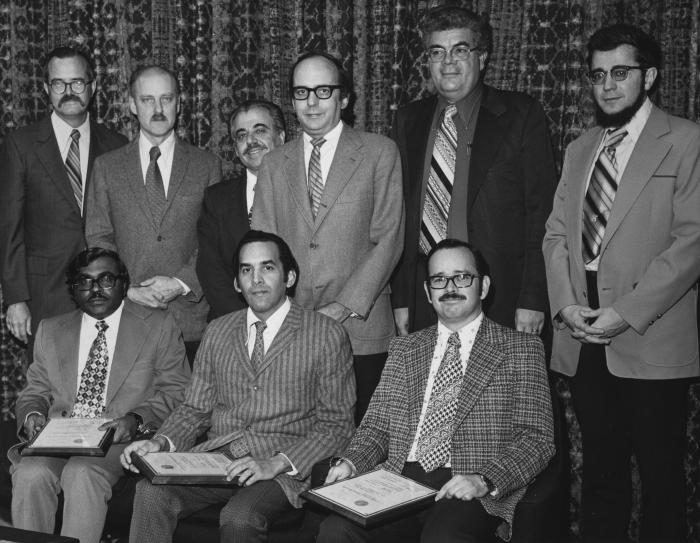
This photograph showed participants in the Centers for Disease Control and Prevention (CDC) Surveillance Course for the Pan-American Health Organization (PAHO). The course was held in the CDC's Atlanta offices from April 5, through December 10, 1971.